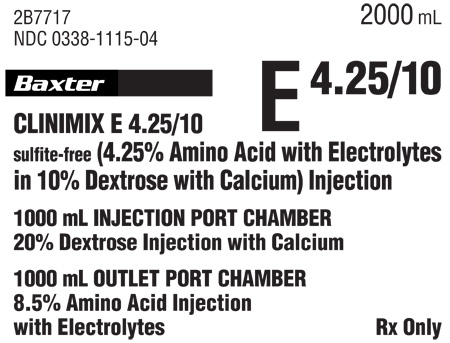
RECALLED – Baxter Clinimix

January 3, 2013 – Product Recall – Baxter Initiates Nationwide Voluntary recall Of Select Lots of Premix Parenteral Nutrition .